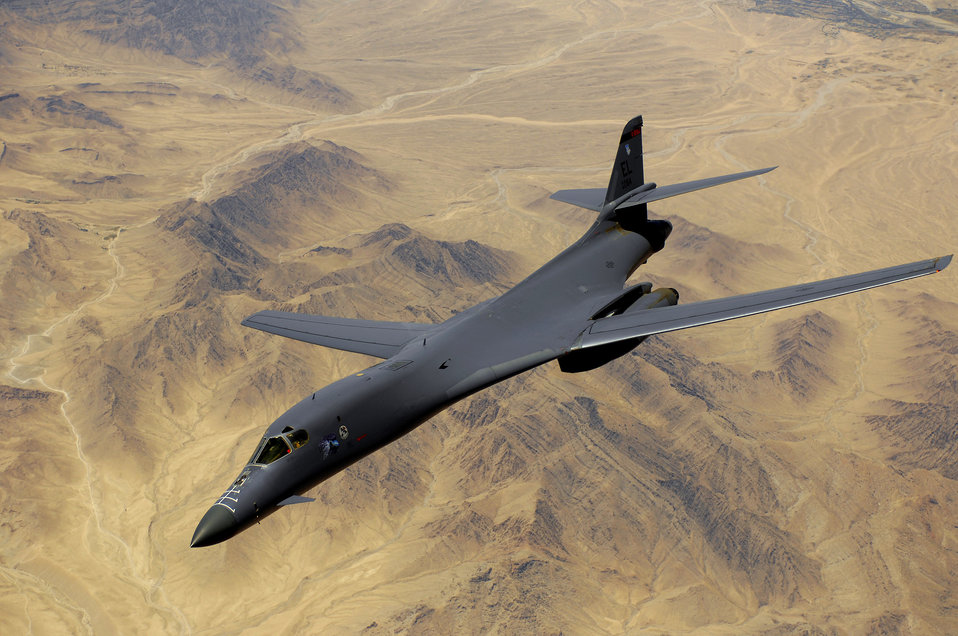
June 26 airpower summary: B-1Bs bomb enemy vehicles

An Air Force B-1B Lancer aircraft moves out of position after receiving fuel from a KC-135R Stratotanker during a mission over Afghanistan.